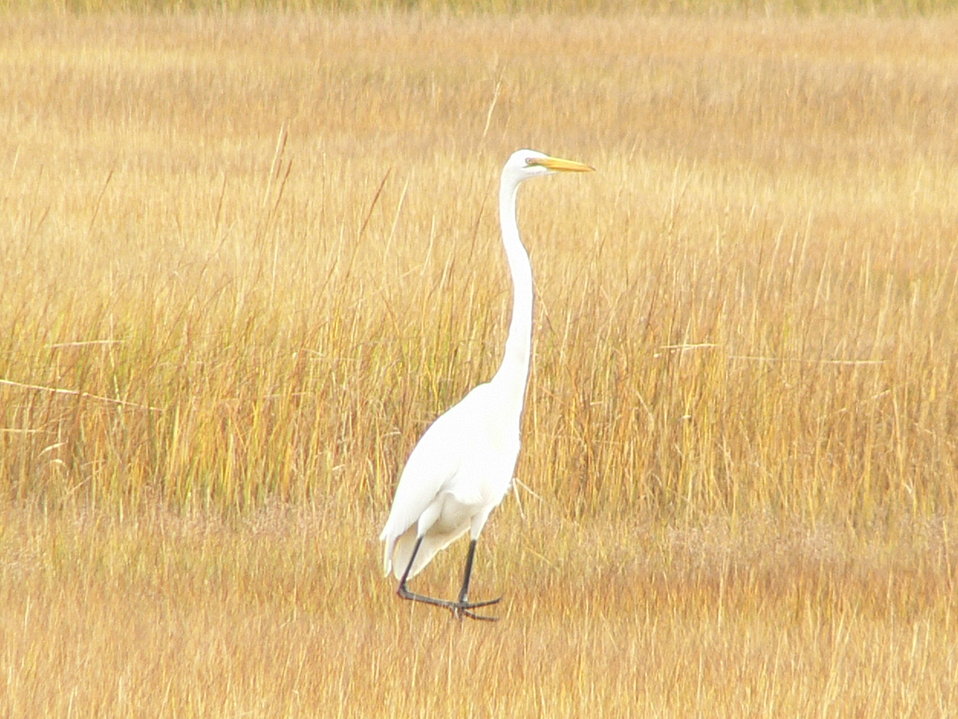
Great egret at Cape May National Wildlife Refuge.